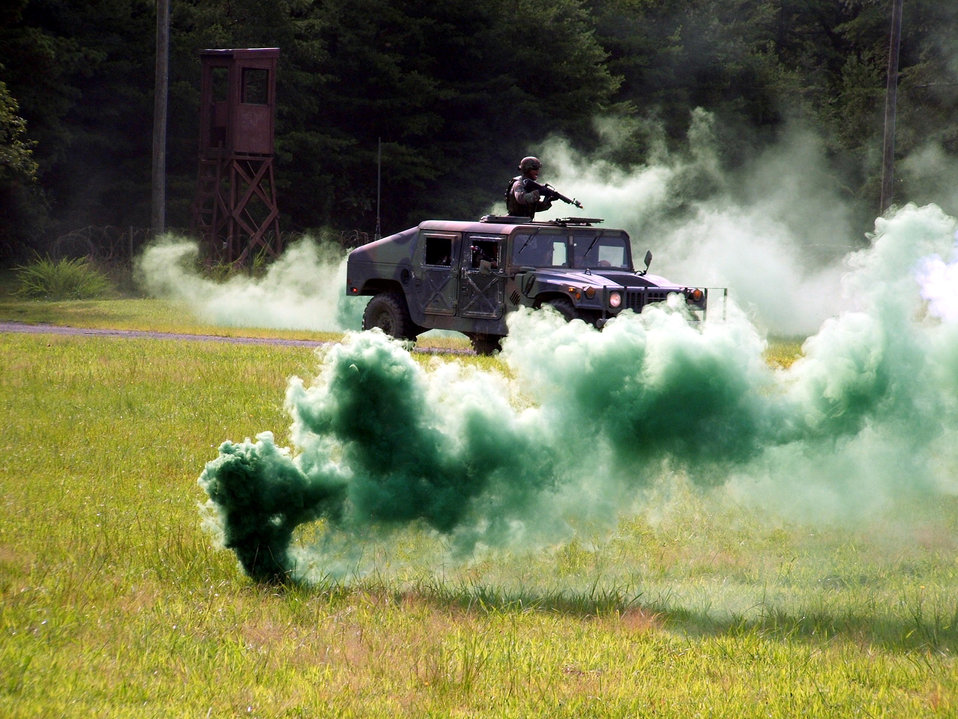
'Deployed' to New Jersey

FORT DIX, N.J. -- Staff Sgt. Sy Pinthong stands in the turret of a Humvee during contingency skills training here.